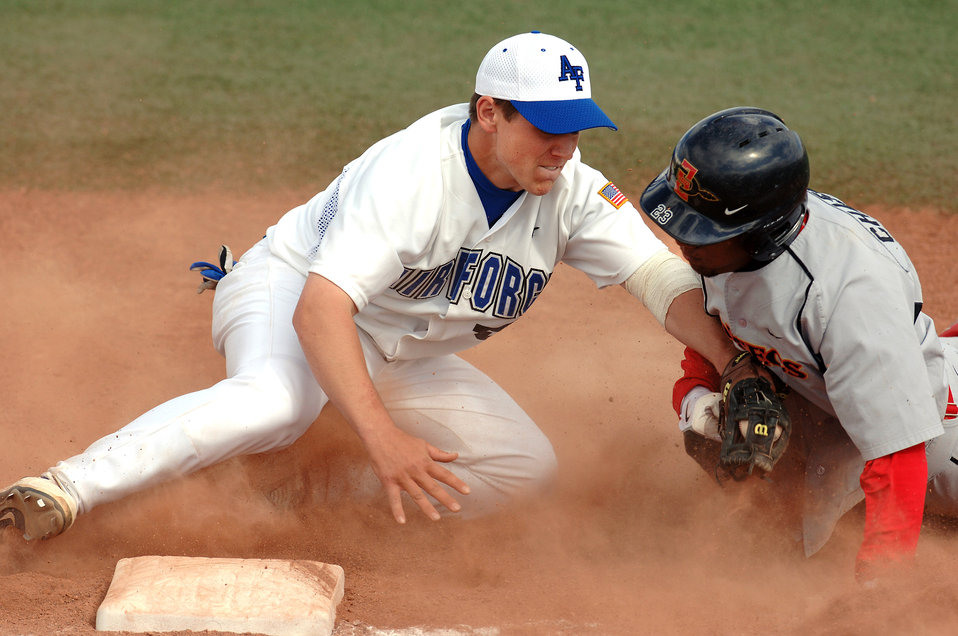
San Diego defeats Falcons

Freshman 3rd baseman Ben Ausbun tags the runner out as the San Diego State Aztecs beat the Air Force Falcons, 12-9 March 22.